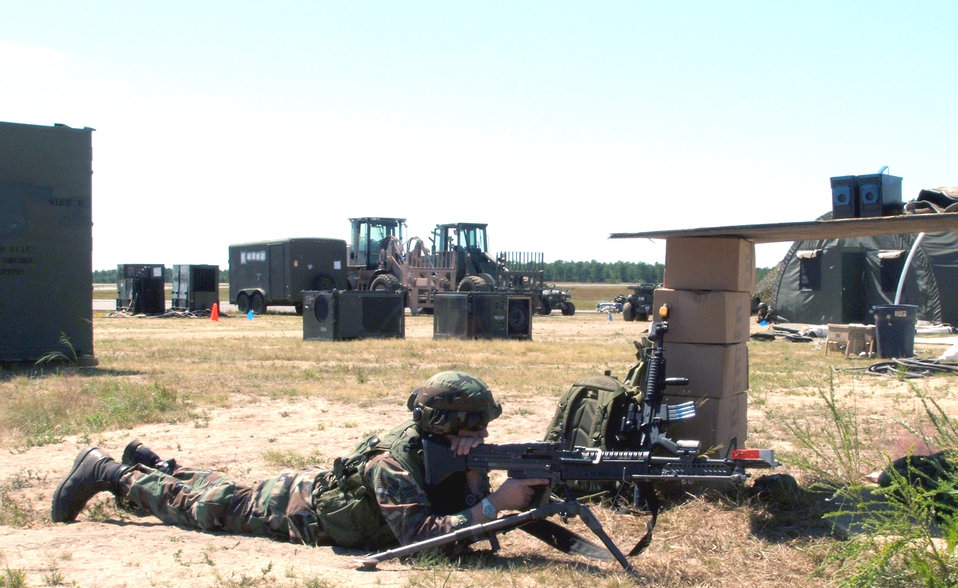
Deployment skills

Airman 1st Class Adriano Ciciotti mans an M-60 machine gun during an Eagle Flag 06-4 scenario at Naval Air Engineering Station Lakehurst, N.J., on Aug. 12. The events, controlled by the Air Mobility Warfare Center's 421st Combat Training Squadron, test Airmen on their expeditionary combat support skills in preparation for deployments. Airman Ciciotti is stationed at Travis Air Force Base, Calif.